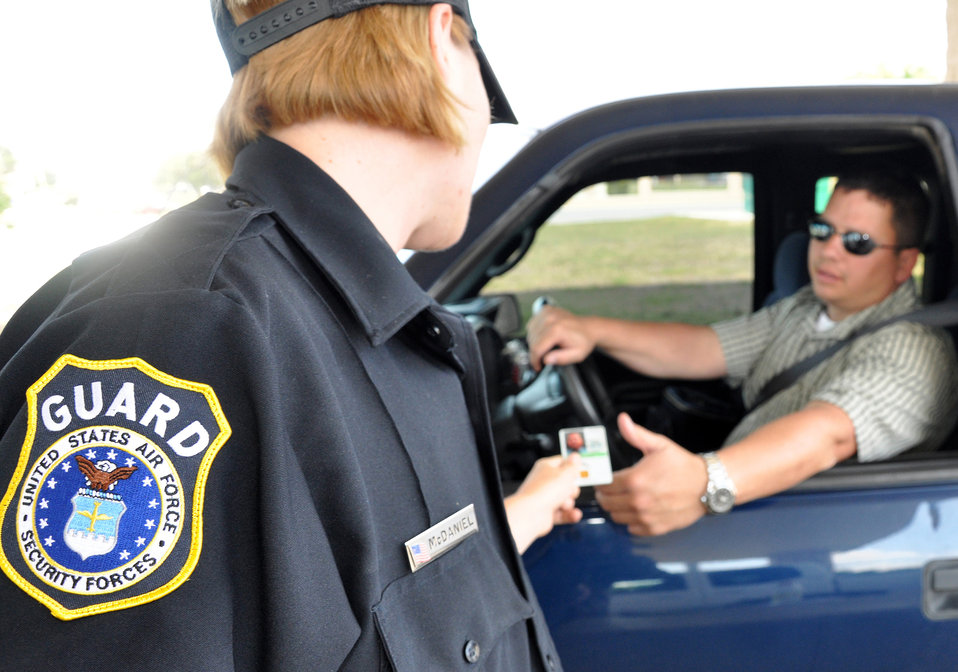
Eglin first to use new gate guards uniforms

Tracy McDaniel checks a base commuter's ID before waving him on May 15 at Eglin Air Force Base, Fla. The newly hired Department of the Air Force Security Forces guards received new uniforms similar to the Los Angeles Police Department uniform as part of an Air Force-wide initiative. This initiative requires gate guards to have advanced training with weapons, rigorous evaluations of mental and physical fitness as well as at least one year of law enforcement experience. Ms. McDaniel is a Department of the Air Force Security Forces civilian guard.